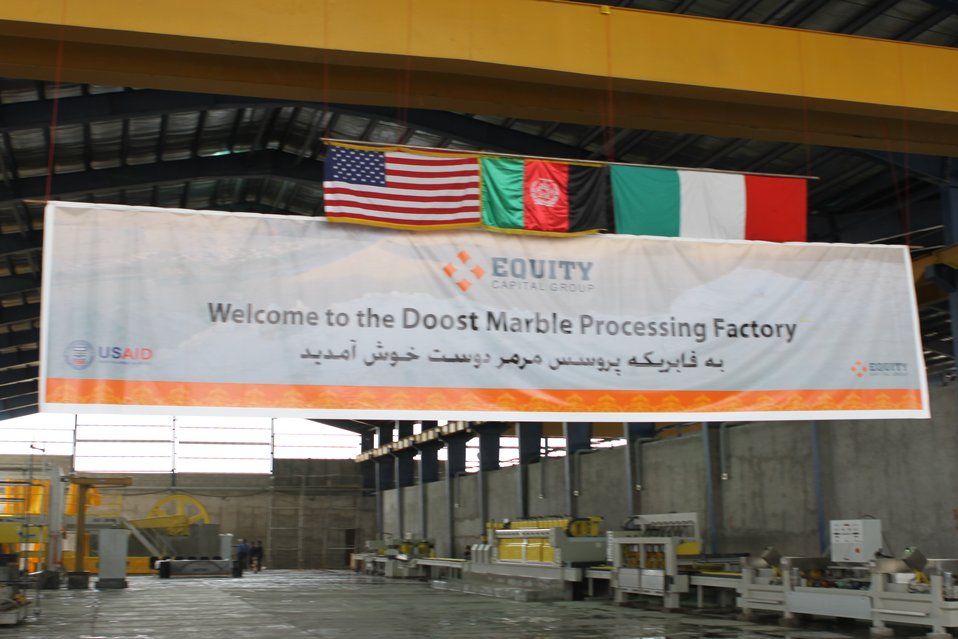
100525 Hirat Marble Conference 051